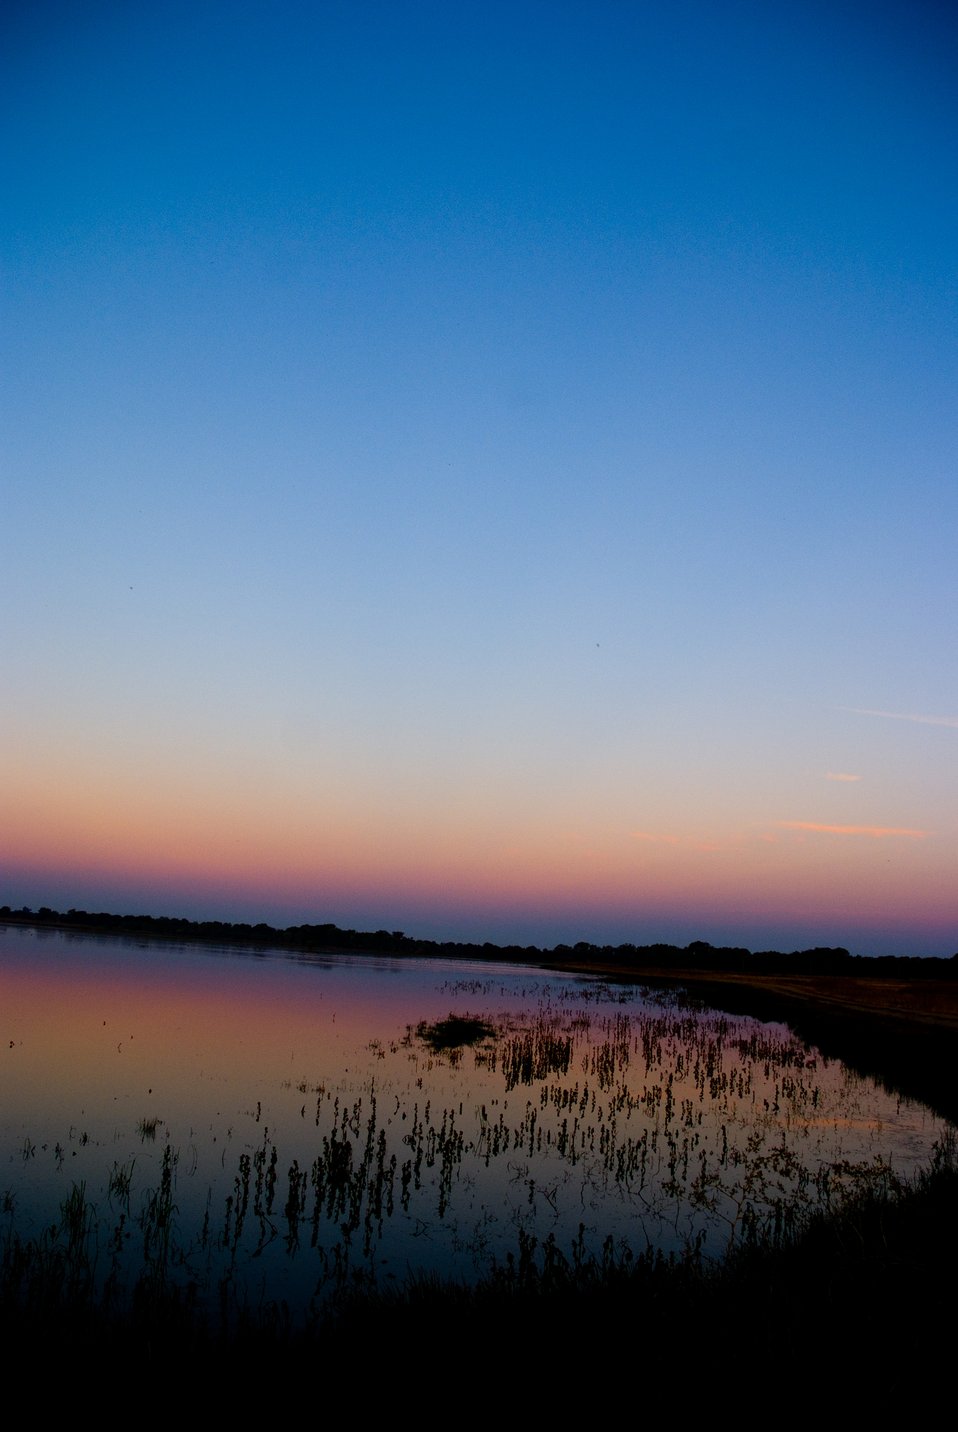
Stone Lakes National Wildlife Refuge at twilight